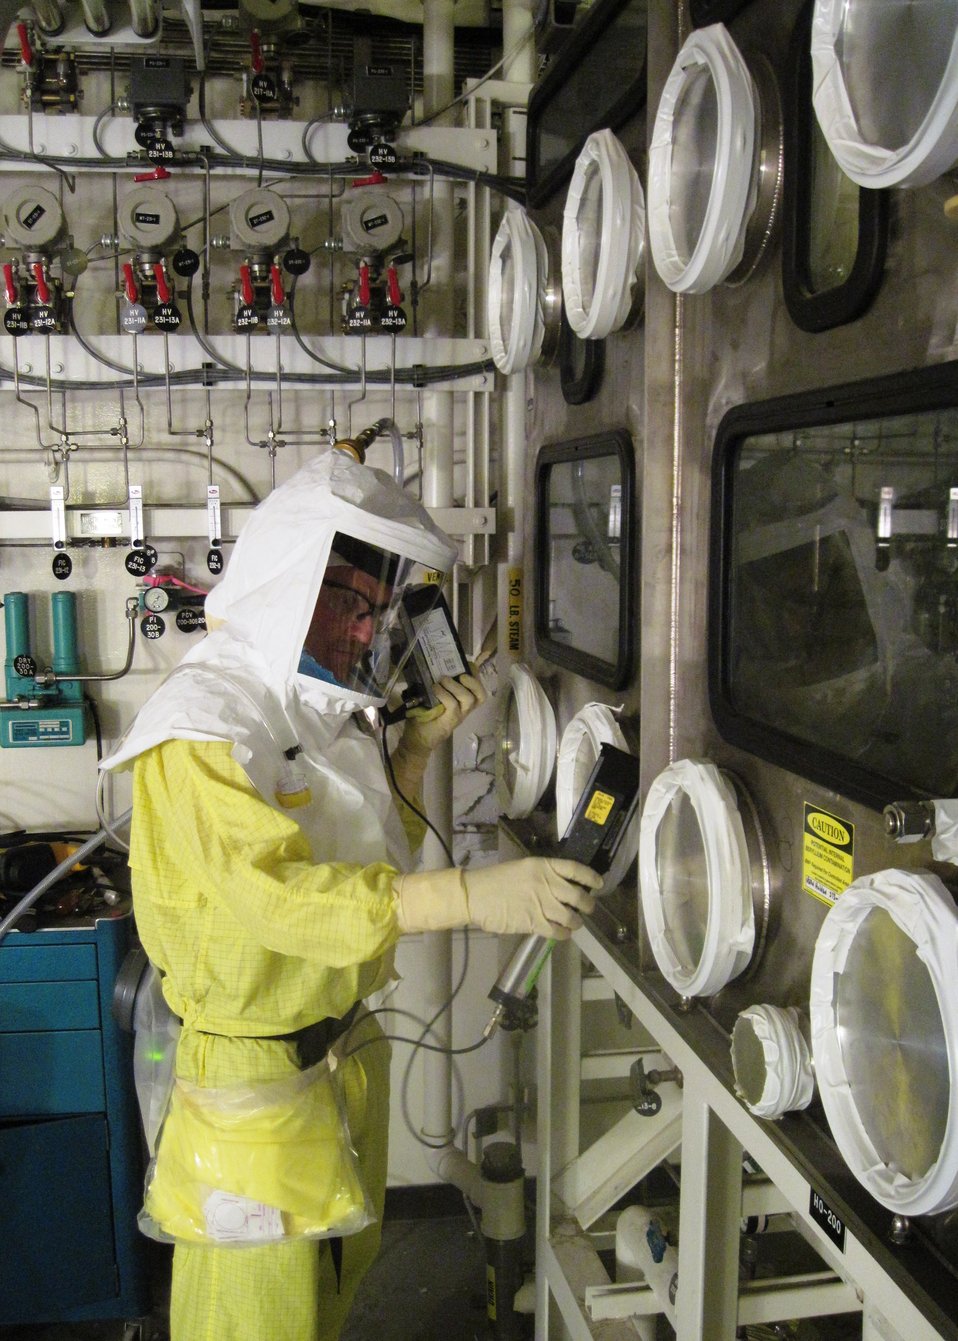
Progress at Hanford Site

As of late September 2010, the Richland Operations Office had spent more than $725 million of its Recovery Act allocation since launching work in April 2009, and progress in cleanup projects has been swift.
Workers have demolished 30 facilities, remediated 23 waste sites, and installed more than 250 wells for monitoring and treating groundwater. They’ve excavated 3.3 million cubic yards of soil for two new disposal cells that will increase capacity at the Environmental Restoration Disposal Facility by 50 percent, to 16.4 million tons of waste. In addition, workers have built a new groundwater treatment facility next to the Columbia River, and they’ve retrieved and treated hundreds of cubic meters of contaminated solid waste.